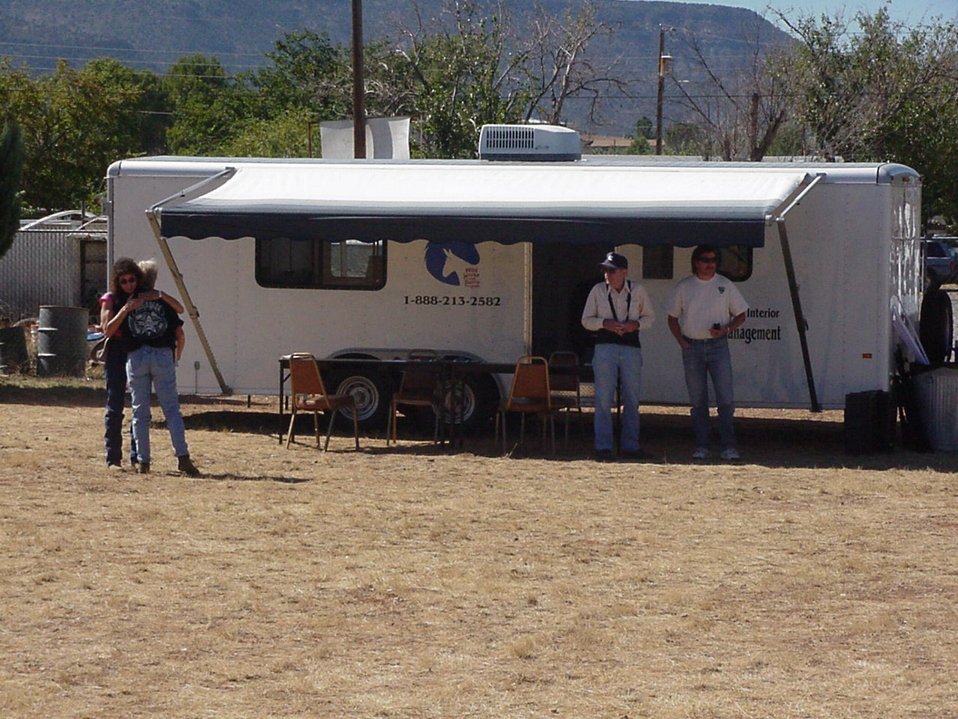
The BLM portable headquarters for running the wild horse and burro adotion at Camp Verde.